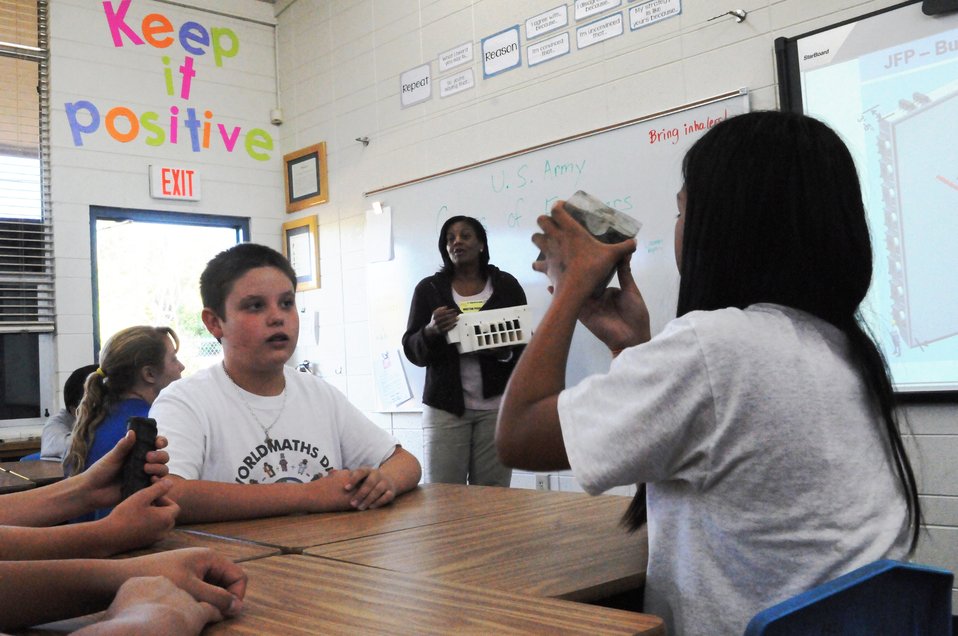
Pam Amie describes the Folsom Dam auxiliary spillway project to 7th grade students at St. John Notre Dame School in Folsom, Calif., Sept. 18, 2013. Amie, a project manager with the U.S. Army Corps of Engineers Sacramento District, also explained how physical sciences and mathematics are critical skills that engineers use every day to build both small projects and massive projects like the spillway.